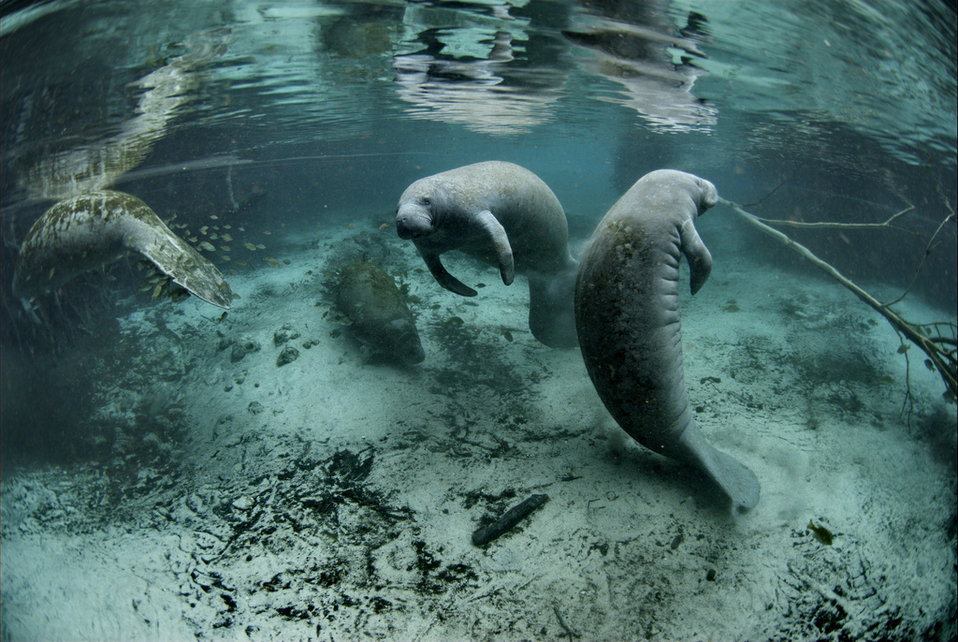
Endangered Florida manatee (Trichechus manatus)

Photo credit: David Hinkel

The Crystal River National Wildlife Refuge, was established in 1983 specifically for the protection of the endangered West Indian Manatee. This unique refuge preserves the last unspoiled and undeveloped habitat in Kings Bay, which forms the headwaters of the Crystal River. The refuge preserves the warm water spring havens, which provide critical habitat for the manatee populations that migrate here each winter.